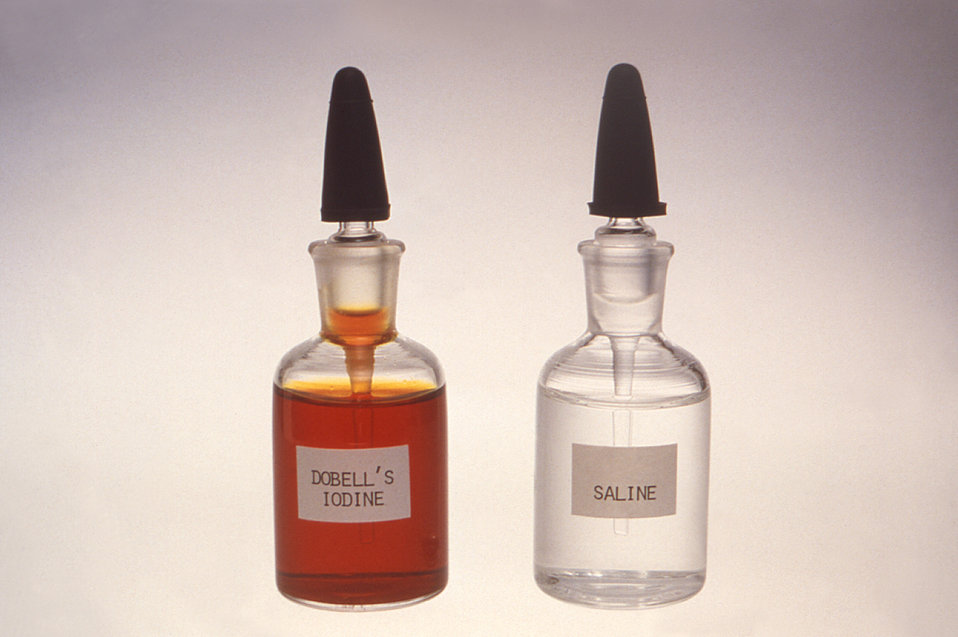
This 1981 image depicted a dropper-bottle of iodine (LT), and a dropper-bottle of saline solution, which are two widely used reagents integral in many histochemical laboratory procedures.